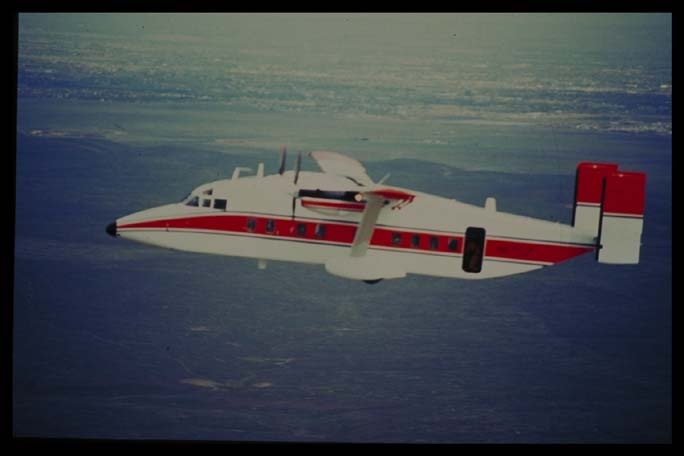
Fixed wing in flight